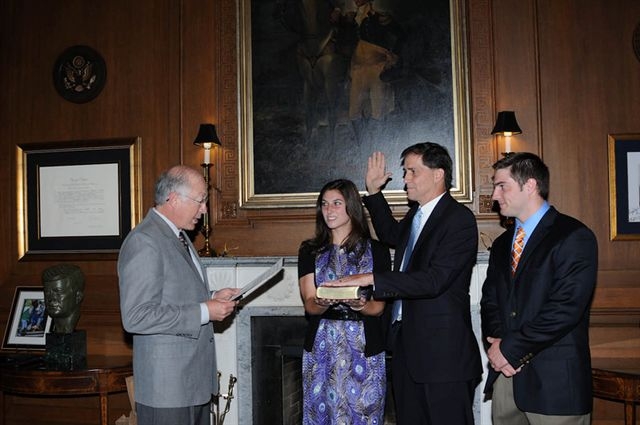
Dan Ashe Confirmed as 16th Director of U.S. Fish and Wildlife Service

New director of U.S. Fish and Wildlife Service, Dan Ashe, is sworn in by Secretary Salazar.